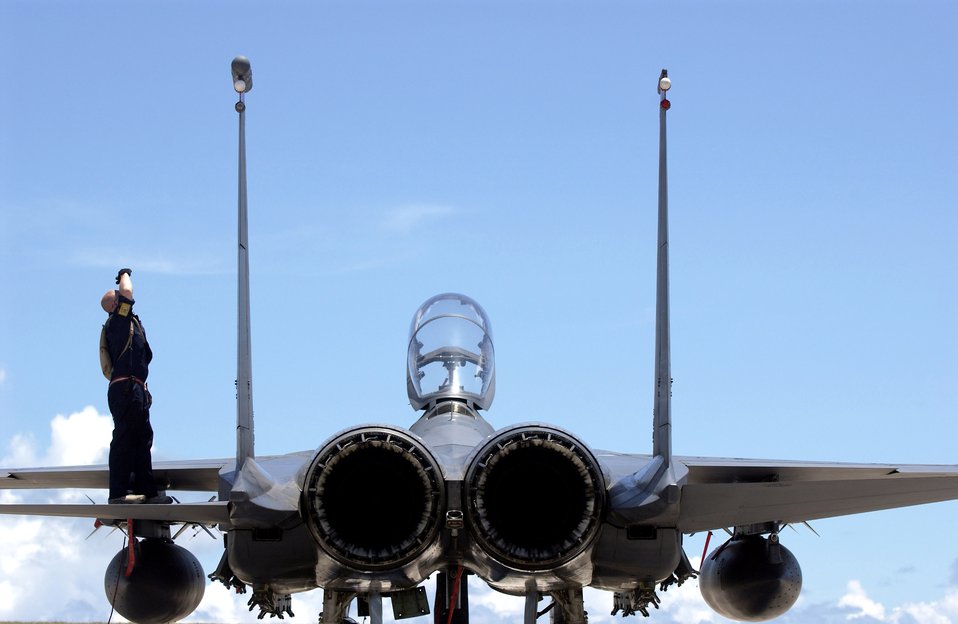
Strike Eagles stay sharp

Senior Airman Casey Rietdyk checks an F-15E Strike Eagle for airframe damage after a training sortie at Andersen Air Force Base, Guam, on June 5. The Strike Eagles are here through September as part of an air expeditionary deployment. Airman Rietdyk is assigned to the 36th Expeditionary Aircraft Maintenance Squadron.